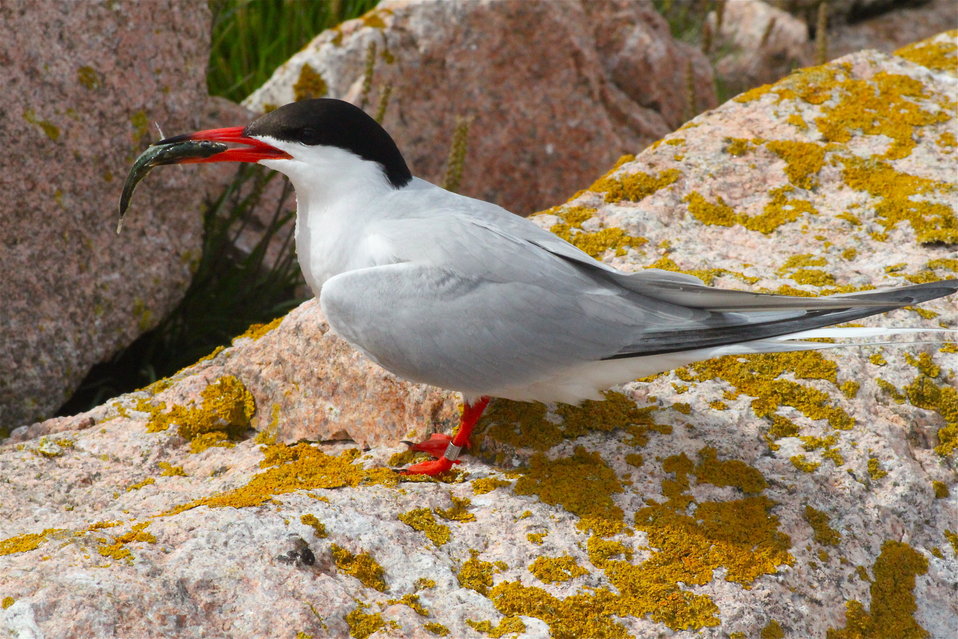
Common Tern With Fish